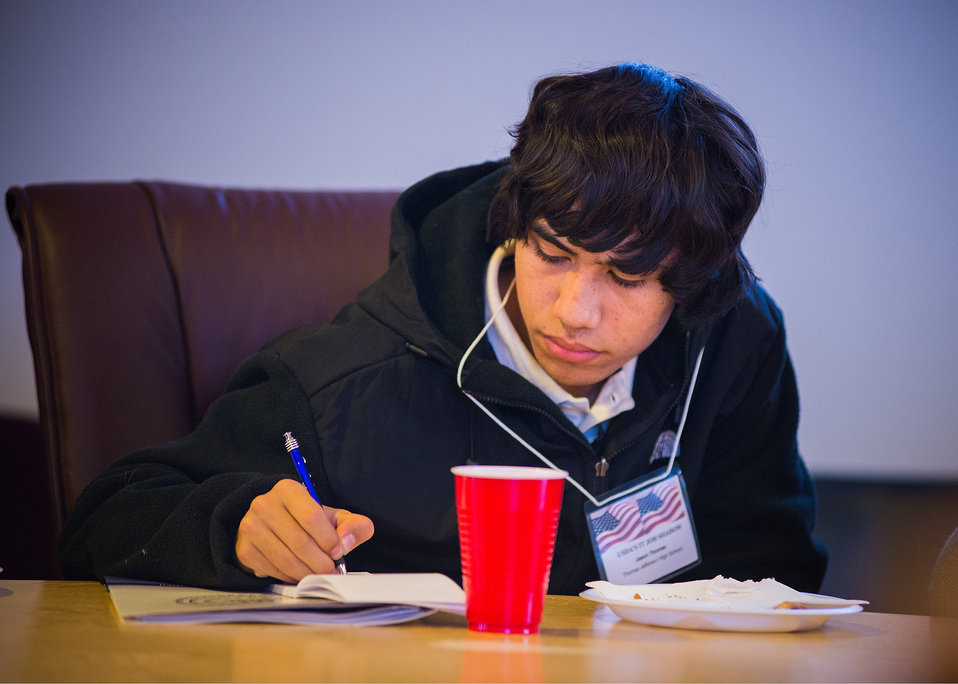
Jason Thomas, a student from Thomas Jefferson High School of Science and Technology in Alexandria, VA takes notes during the U.S. Department of Agriculture, Office of the Chief Information Officer (OCIO) IT Job Shadow Day, Tuesday, Mar. 25, 2014. The OCIO IT Job Shadow Day hosts students from local high schools in the Washington, D.C. area annually with IT professionals and agricultural specialists from a variety of mission areas at USDA.